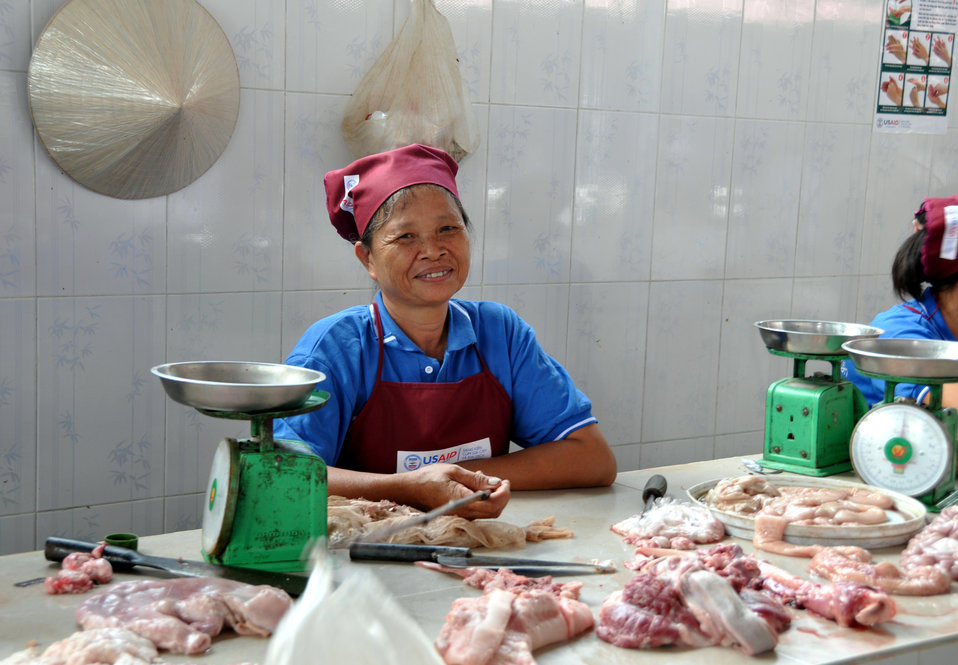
Handover Ceremony Hoa Mac Market Ha Nam

October 26, 2012